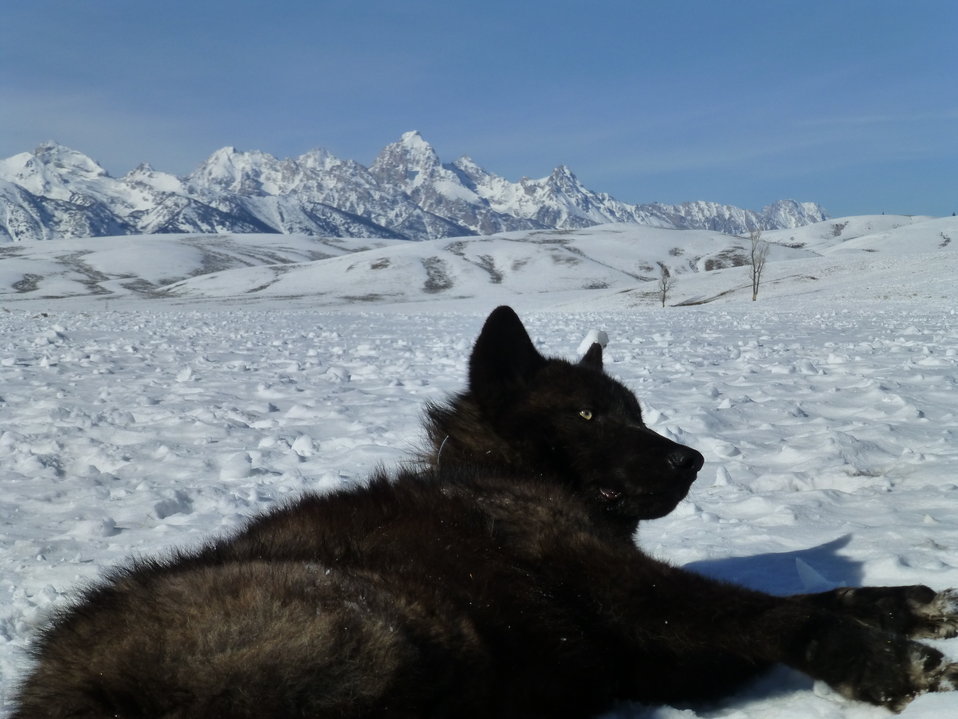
A Recovery Area with a View

With a dramatic view of the Teton Range in the background, a black wolf lifts its head as it becomes more alert.